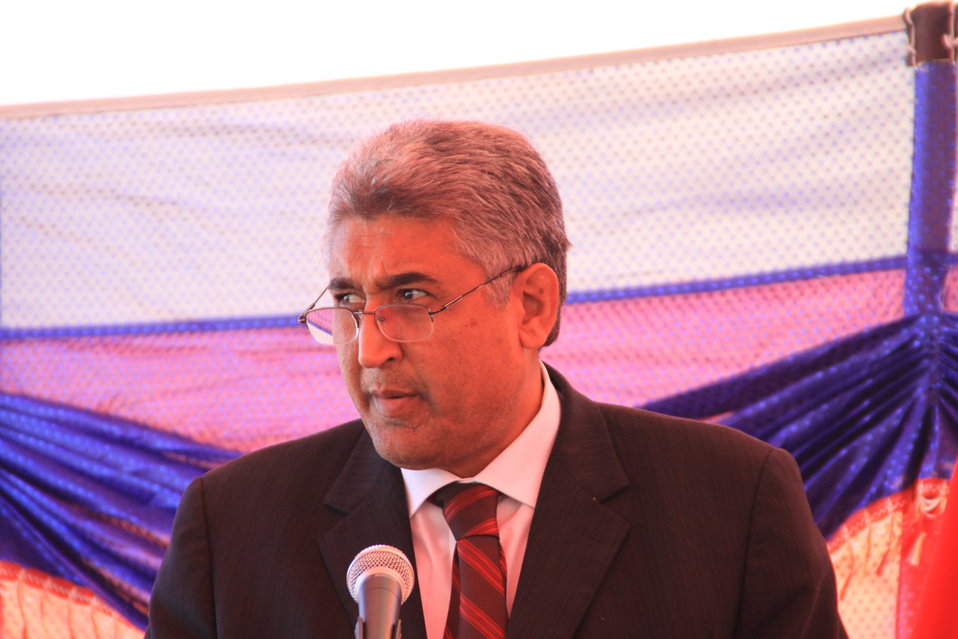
AVIPA Plus Wheat Seed Distribution 101005

US Ambassador Karl Eikenberry and USAID Acting Mission Director Kevin Brownawell joined the Minister of Agriculture, Irrigation and Livestock, H.E. Minister Mohammed Rahimi in signing a Memorandum of Understanding and distributing vouchers to area farmers for wheat and fertilizer.

US Ambassador Karl Eikenberry and USAID Acting Mission Director Kevin Brownawell joined the Minister of Agriculture, Irrigation and Livestock, H.E. Minister Mohammed Rahimi in signing a Memorandum of Understanding and distributing vouchers to area farmers for wheat and fertilizer.